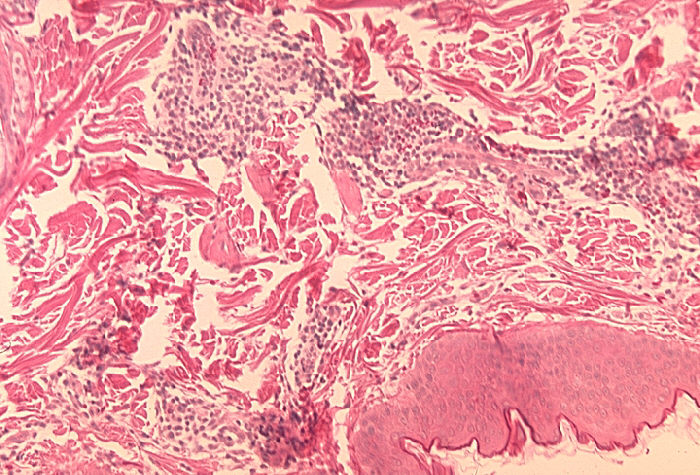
Histopathology of delayed hypersensitivity reaction to Schistosoma mansoni antigen in monkey with transfer factor. Skin.